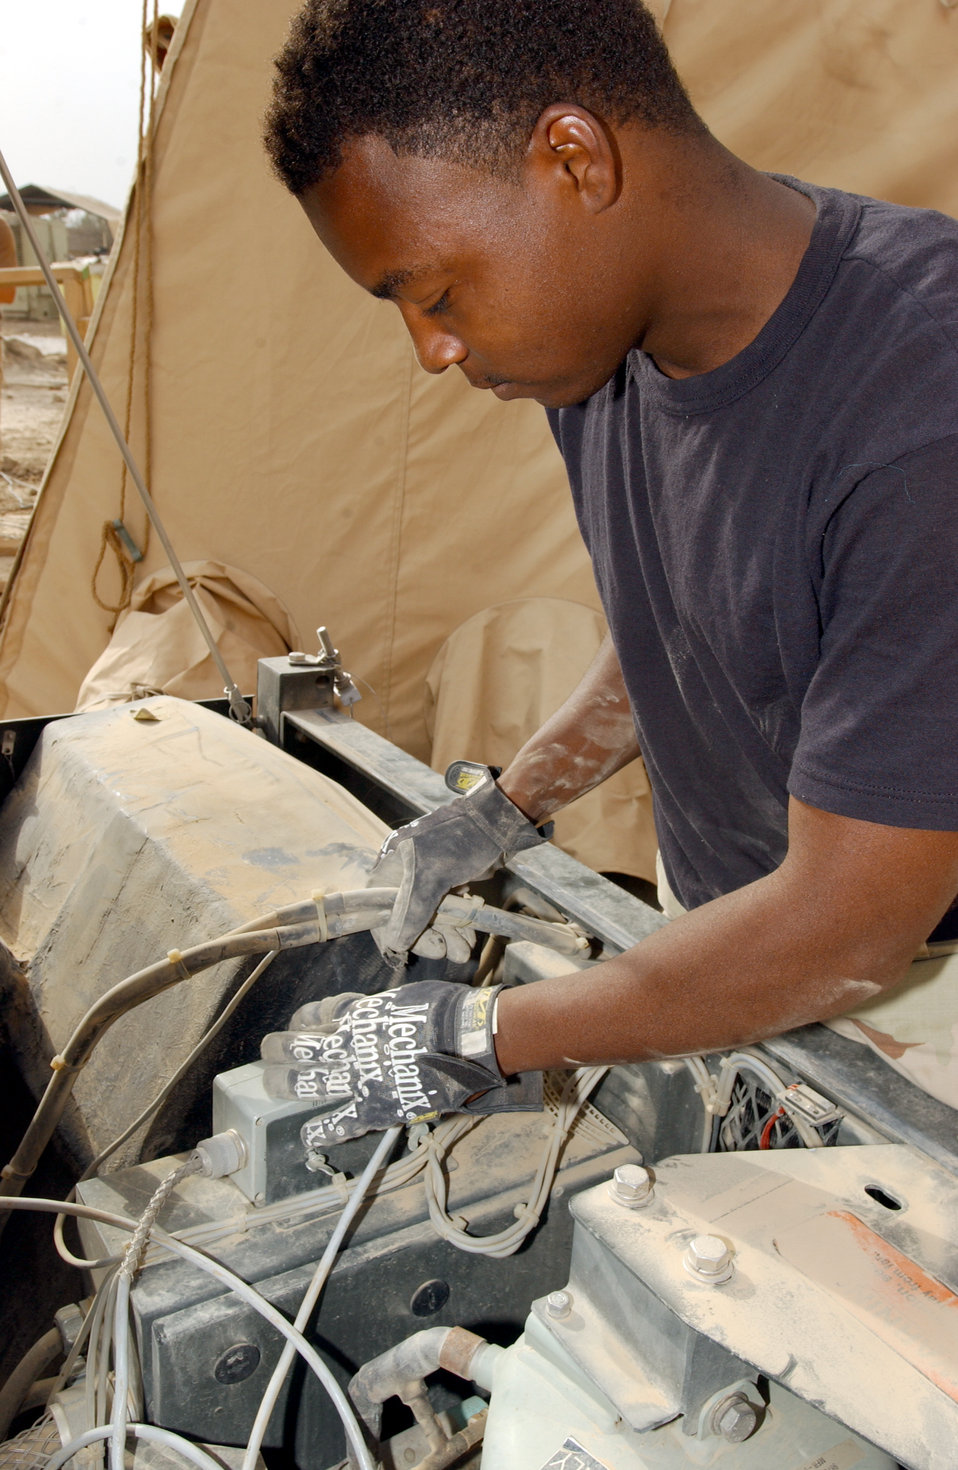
Keeping it cool

TALLIL AIR BASE, Iraq -- Senior Airman Andre D. Cravens conducts a routine inspection on an air conditioning unit here to make sure it is working properly May 22. Airman Cravens is a member of the 407th Expeditionary Communications Squadron.